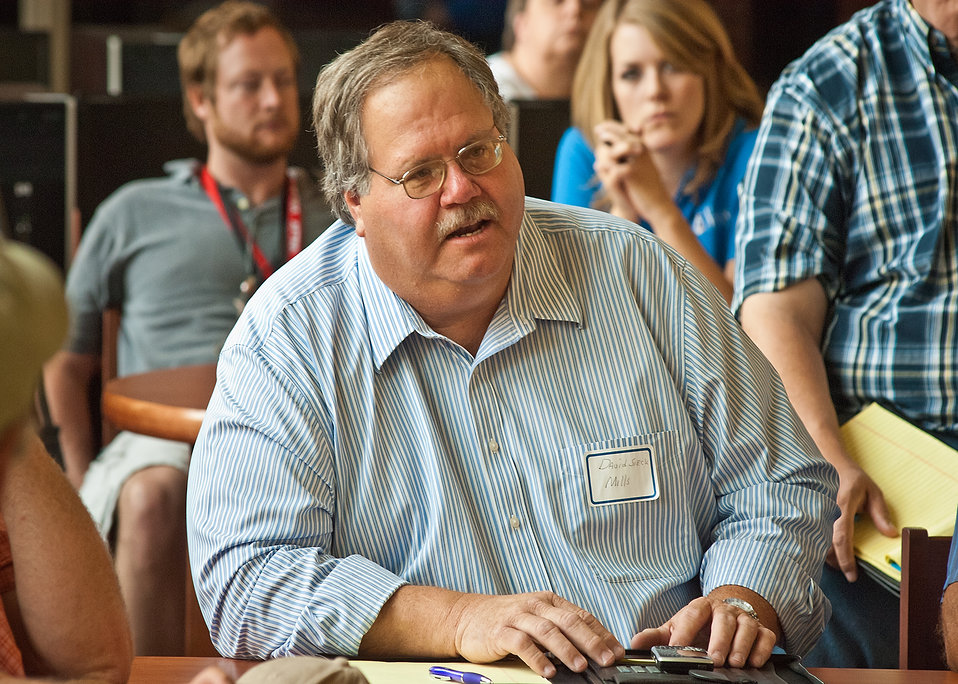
David Sieck a farmer from Mills County Iowa questions Agriculture Secretary Tom Vilsack during a town hall meeting at the Glenwood Community High School in Glenwood, Iowa on Thursday, June 16, 2011. Farmers, local and regional media listened and questioned Secretary Vilsack on the cause of the floodwaters along the Missouri River affecting Iowa and Nebraska. Secretary Vilsack offered advice and assistance available through the United States Department of Agriculture and other federal agencies.